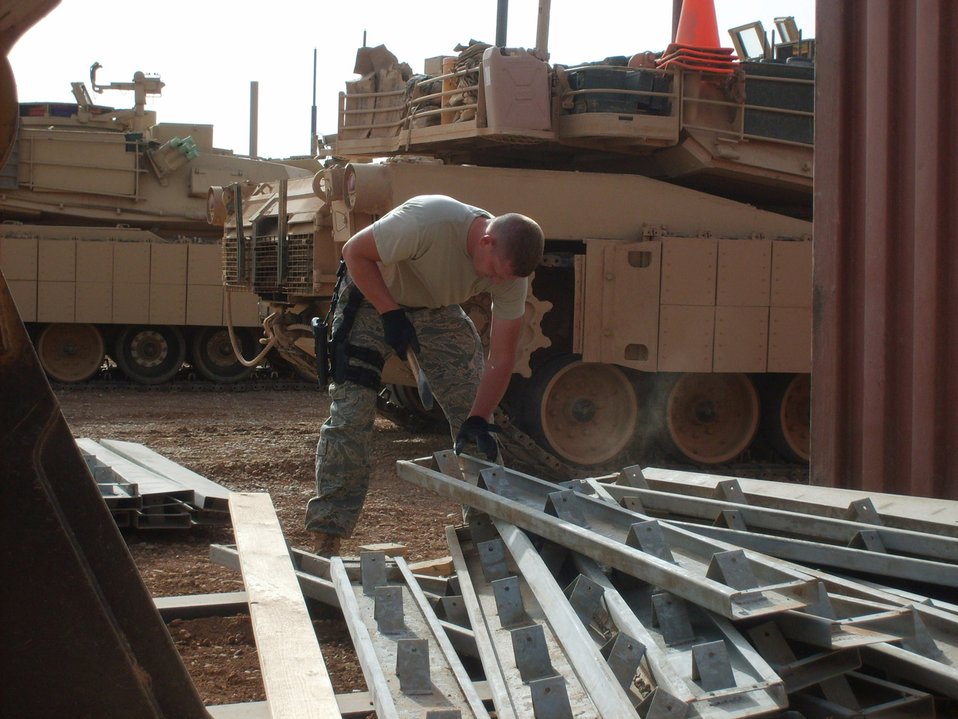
CE Airmen complete projects to benefit U.S., Iraqi army

Staff Sgt. Josh Jeffreys cleans concrete forms after a cement pouring project at Forward Operating Base Caldwell, Iraq. The concrete forms are used in the process of making pads for the Army motorpool Soldiers. These pads will allow Soldiers to perform maintenance on their vehicles without having to be in the dirt and mud. Staff Sergeant Jeffreys is a heavy equipment operator with the 732nd Expeditionary Civil Engineer Squadron.